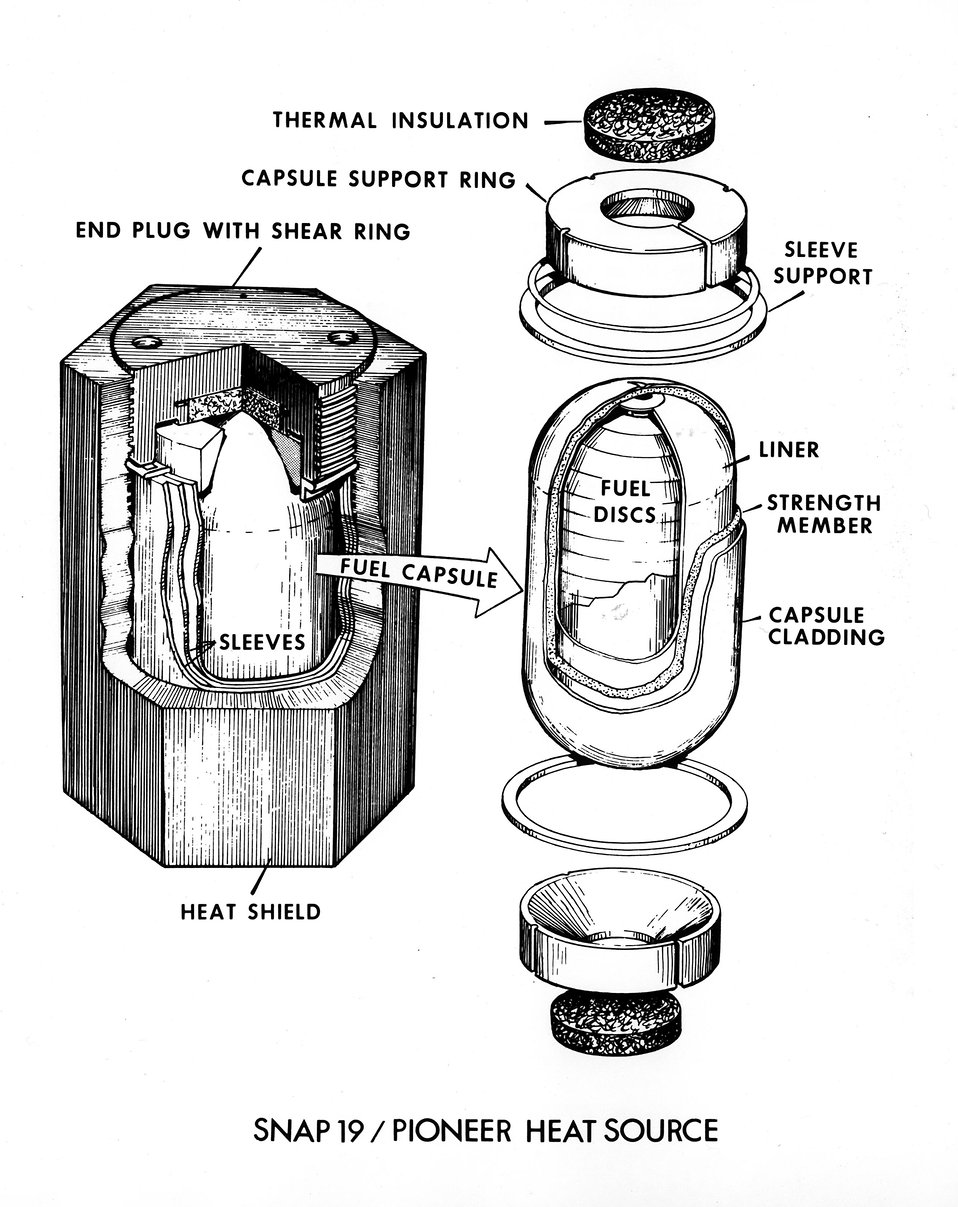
Cutaway of the Plutonium-238 fuel capsule of the SNAP-19 radioisotope thermometric generator (atomic battery). Circa 1972.